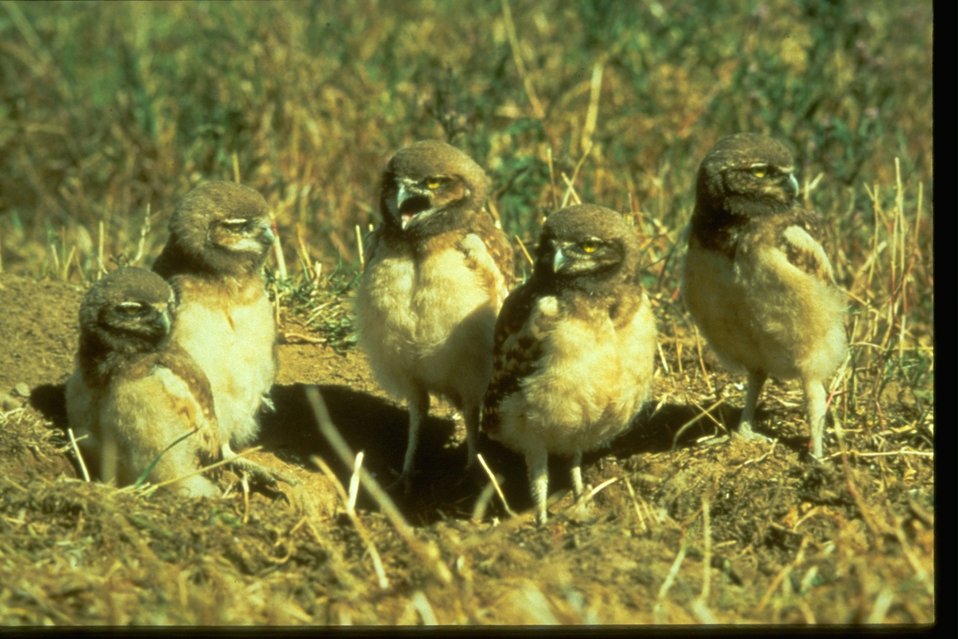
Burrowing owls standing on the outter edge of a hole in the ground.